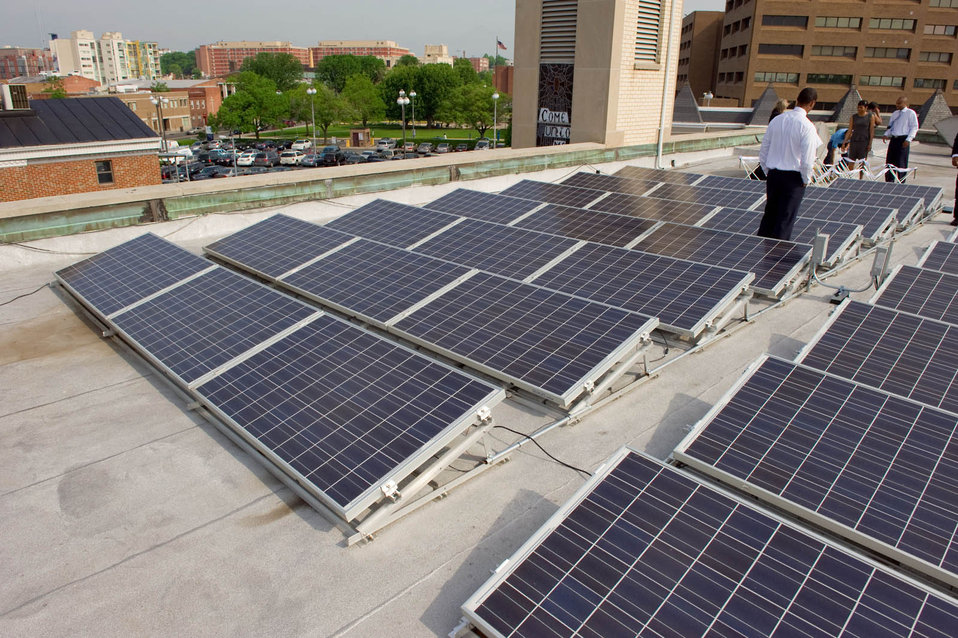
2011-05-03 FlaAveSolar 003